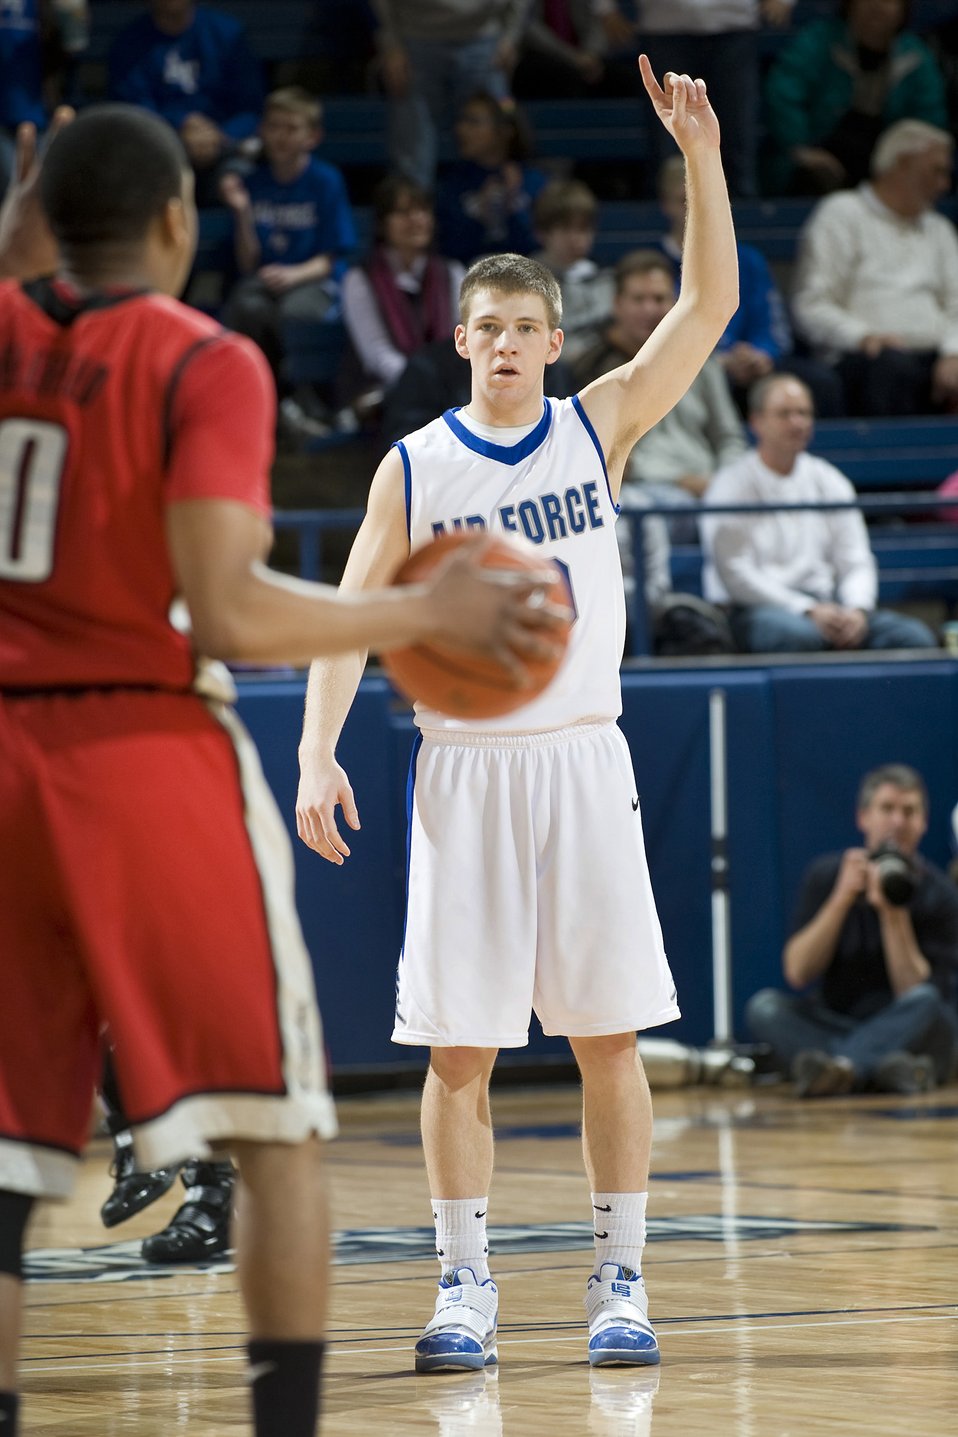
Falcons fall to Running Rebels

Falcon freshman guard Todd Fletcher calls out defensive assignments as the Falcons try to slow down the University of Nevada Las Vegas Running Rebels during the game at the U.S. Air Force Academy's Clune Arena Feb. 27, 2010. UNLV went on to defeat the Falcons by a score of 77 to 47.